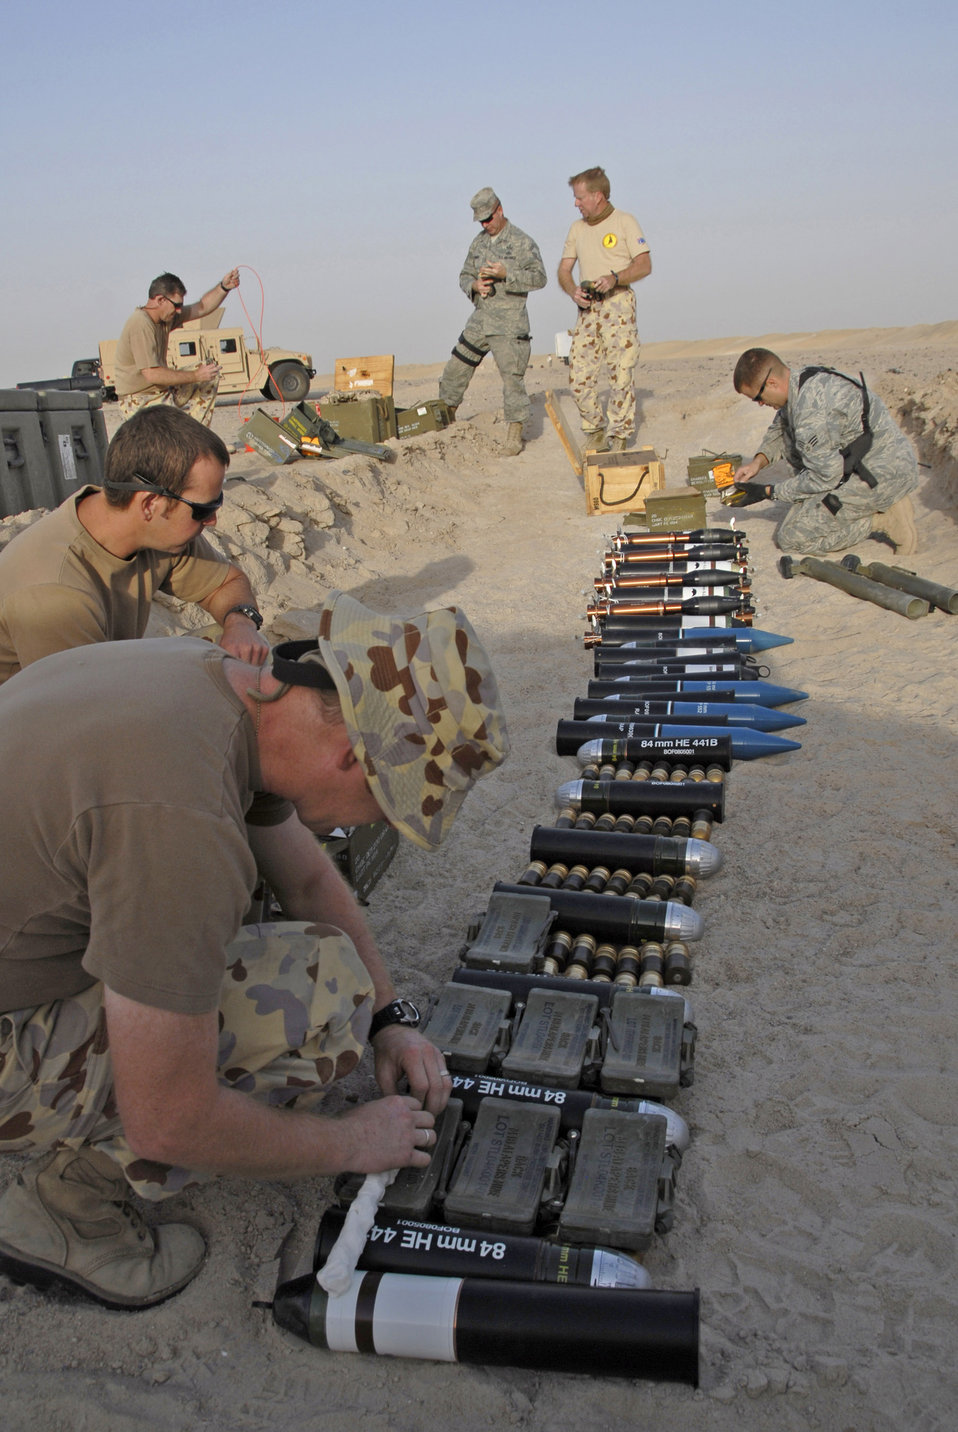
Americans, Australians go out with a bang

Australian army ammunition technicians and members from the 386th Expeditionary Civil Engineer Squadron Explosive Ordnance Disposal Flight lay down plastic explosive over munitions during a controlled detonation June 20 at an EOD range in Southwest Asia. The joint detonation also provided an opportunity for the coalition forces to enhance relations while learning some of the slight differences in operating procedures.